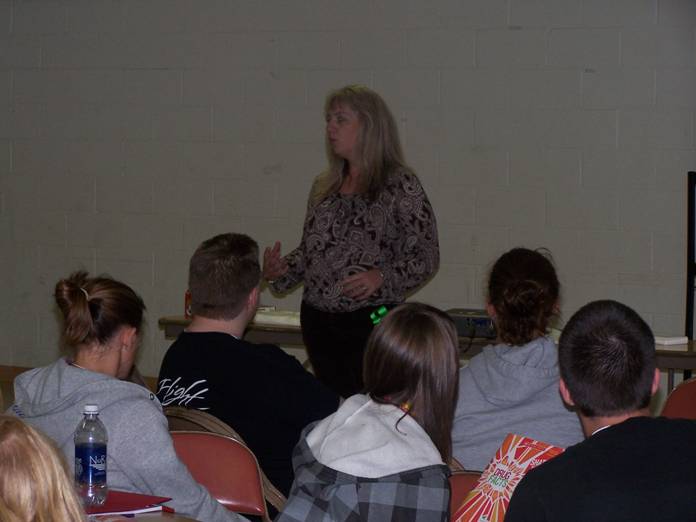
LAUNCH inc. Event in Jackson, OH

Dr. Natasha Slesnick, NIDA Grantee during NDFW and the event hosted by LAUNCH inc. in Jackson, OH